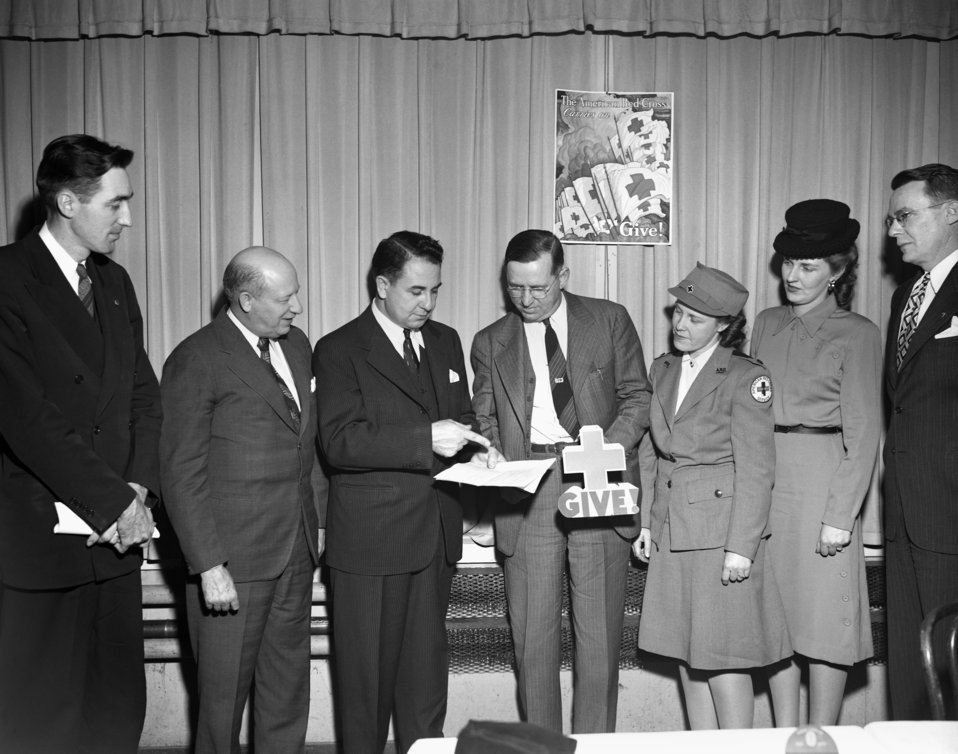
Red Cross Dinner Oak Ridge 1947

3303-4a DOE photo Ed Westcott 2-18-1947 Oak Ridge Tennessee